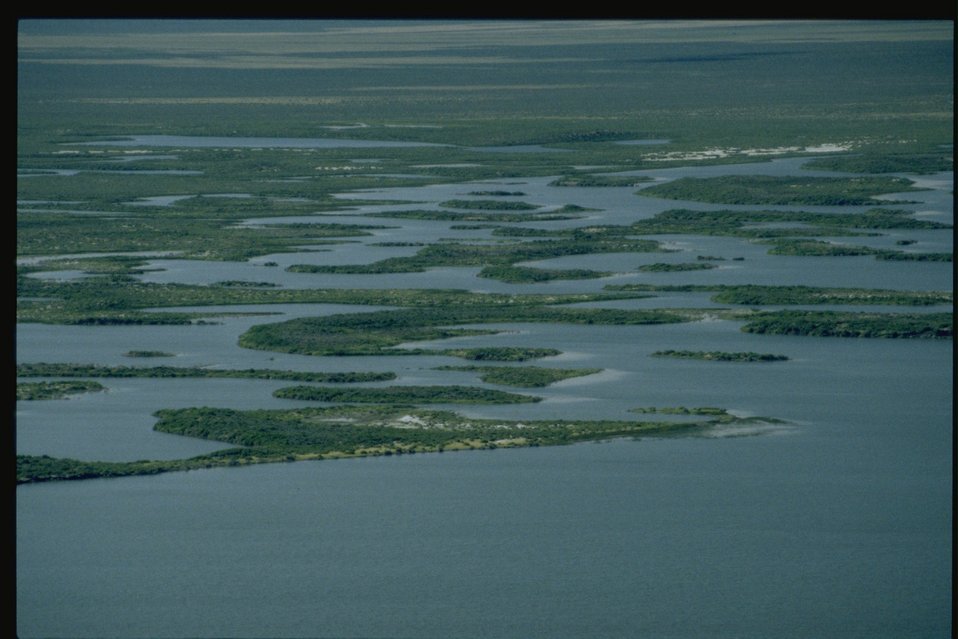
Warner Wetlands.